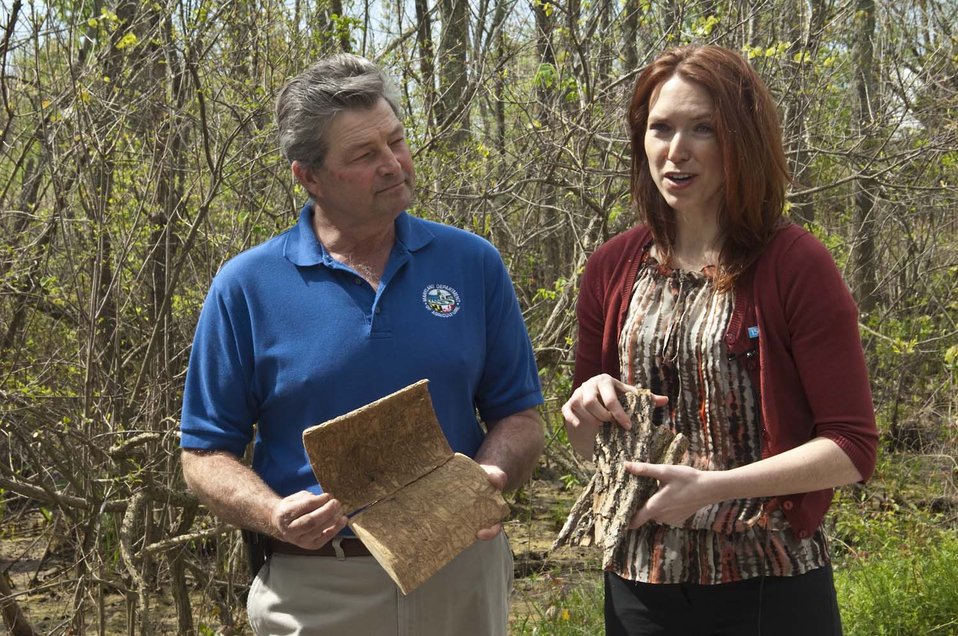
U.S. Department of Agricuture Deputy Under Secretary for Marketing and Regulatory Programs, Rebecca Blue, along with Maryland Agriculture Secretary Buddy Hance, discuss the damage that can be done by emerald ash borer and raise a purple trap for the 2012 EAB survey season.